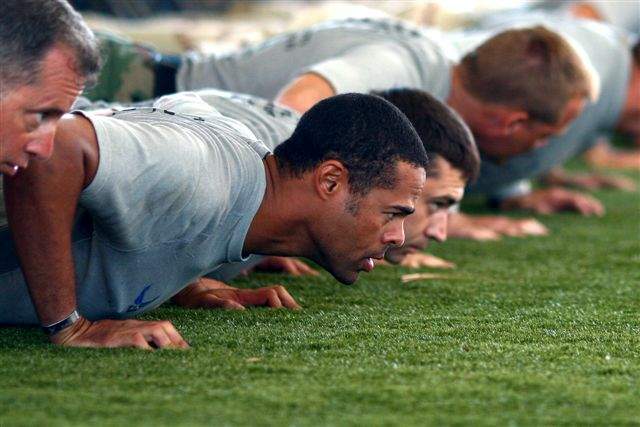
Brothers in arms march for cause

Special tactics Airmen perform push ups after completing the 824-mile memorial rucksack march Oct. 16, 2009, at Hurlburt Field, Fla. The men marched from Lackland Air Force Base, Texas, to Hurlburt Field to honor fallen special operations forces members.